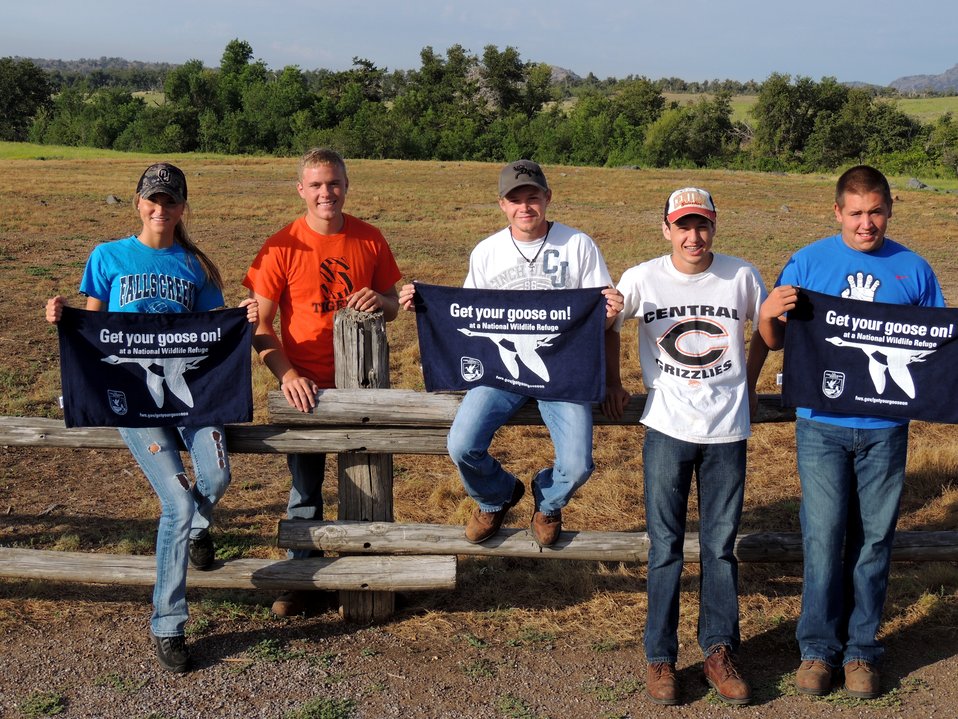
Get Your Goose On!

Wichita Mountains National Wildlife Refuge in Oklahoma.